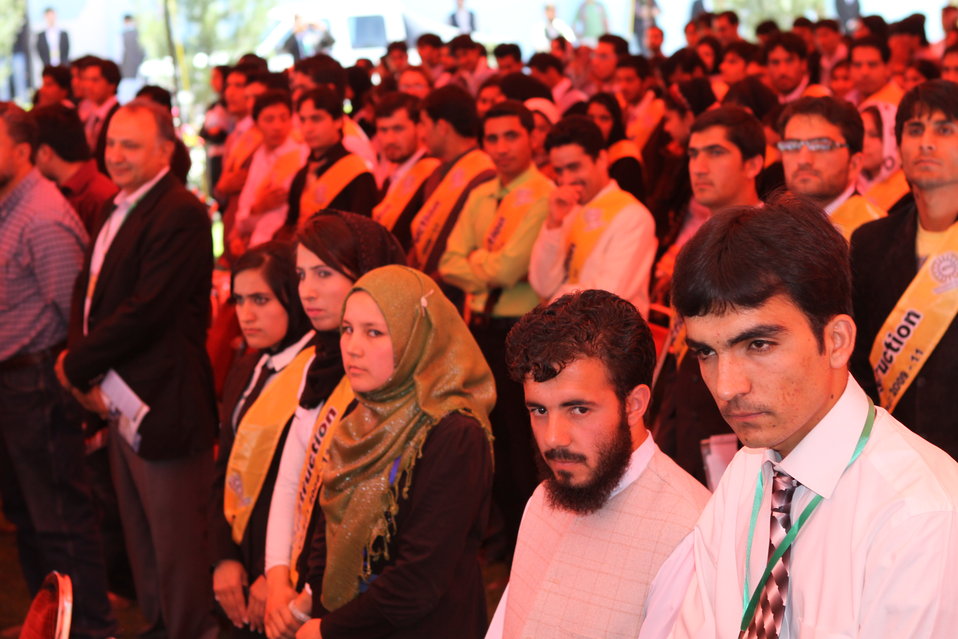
100522 ATVI Graduation 054